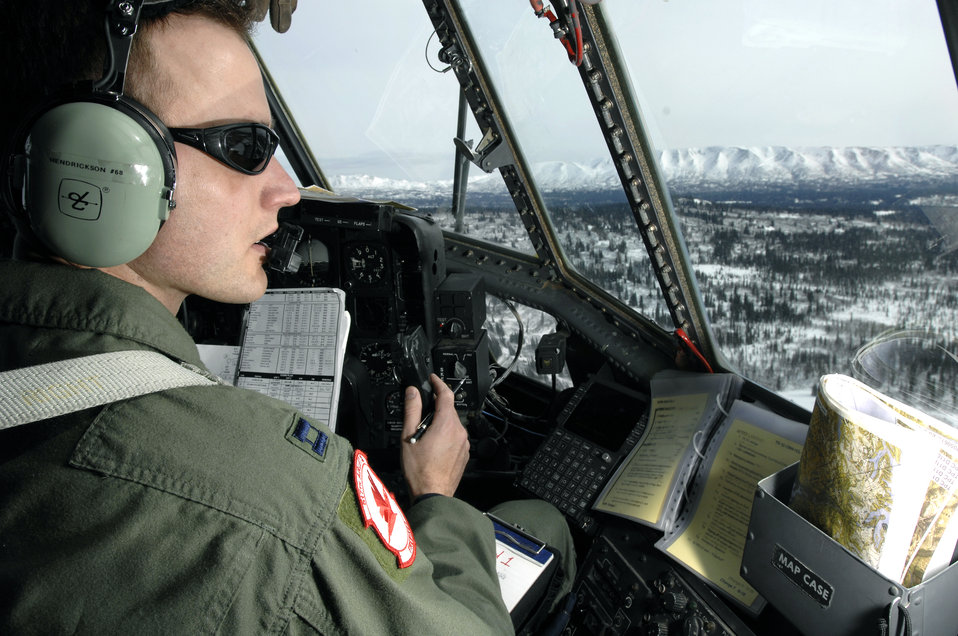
C-130s leaving Alaska

Capt. Ryan Hendrickson looks out over the vast Alaska wilderness during the final flight March 23 of a C-130 Hercules belonging to the 517th Airlift Squadron. After 43 years of continuous service in Alaska, the flight marked the end of the C-130 era at the 517th. Airmen at Elmendorf soon will see C-17 Globemaster IIIs taking over the airlift mission.